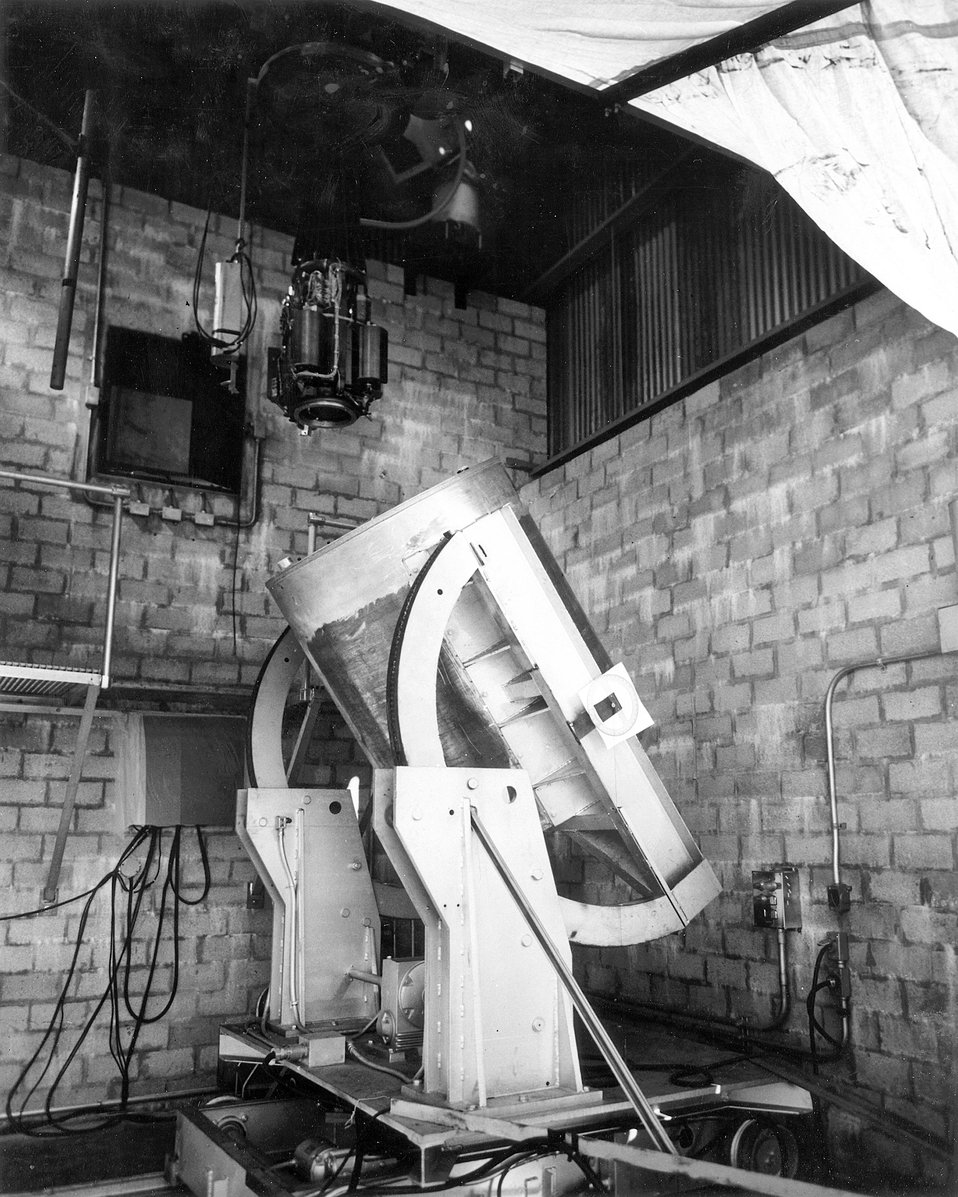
The SNAP-TSF Reactor, a reactor similar in design to those proposed as auxiliary electrical power systems in spacecraft and in manned orbiting laboratories, has been installed at the Atomic Energy Commission's Oak Ridge National Laboratory Tower Shielding Facility.